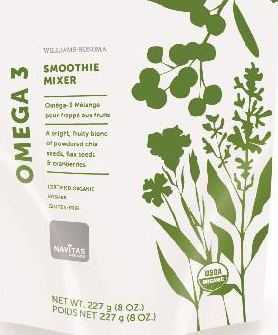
RECALLED – Sprouted Chia Seed Powder Products

June 6, 2014 – Product Recall – Navitas Naturals Expands Voluntary Recall for Organic Sprouted Chia Powder Products.